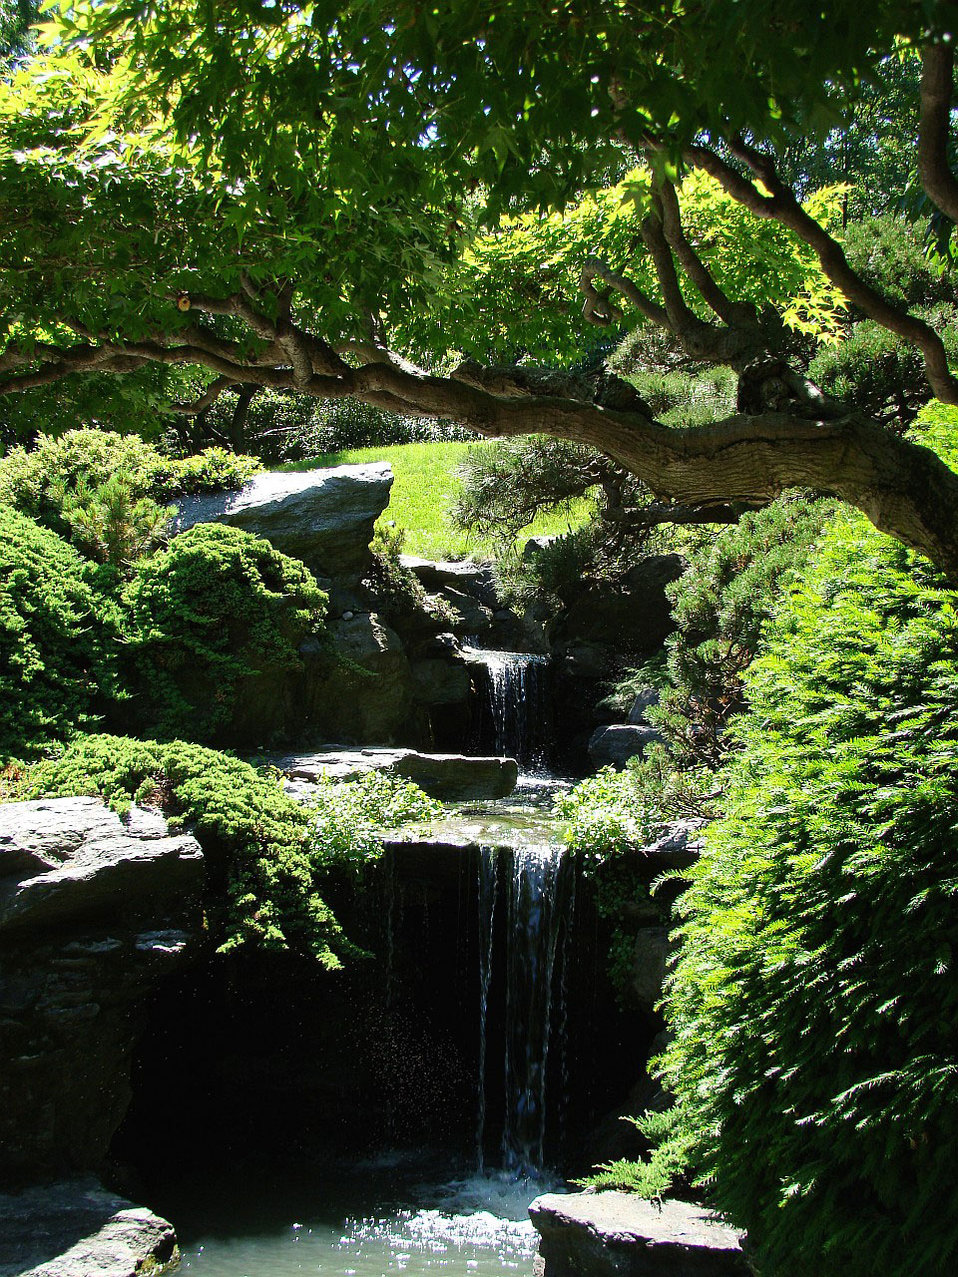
Little falls

Japanese garden falls.